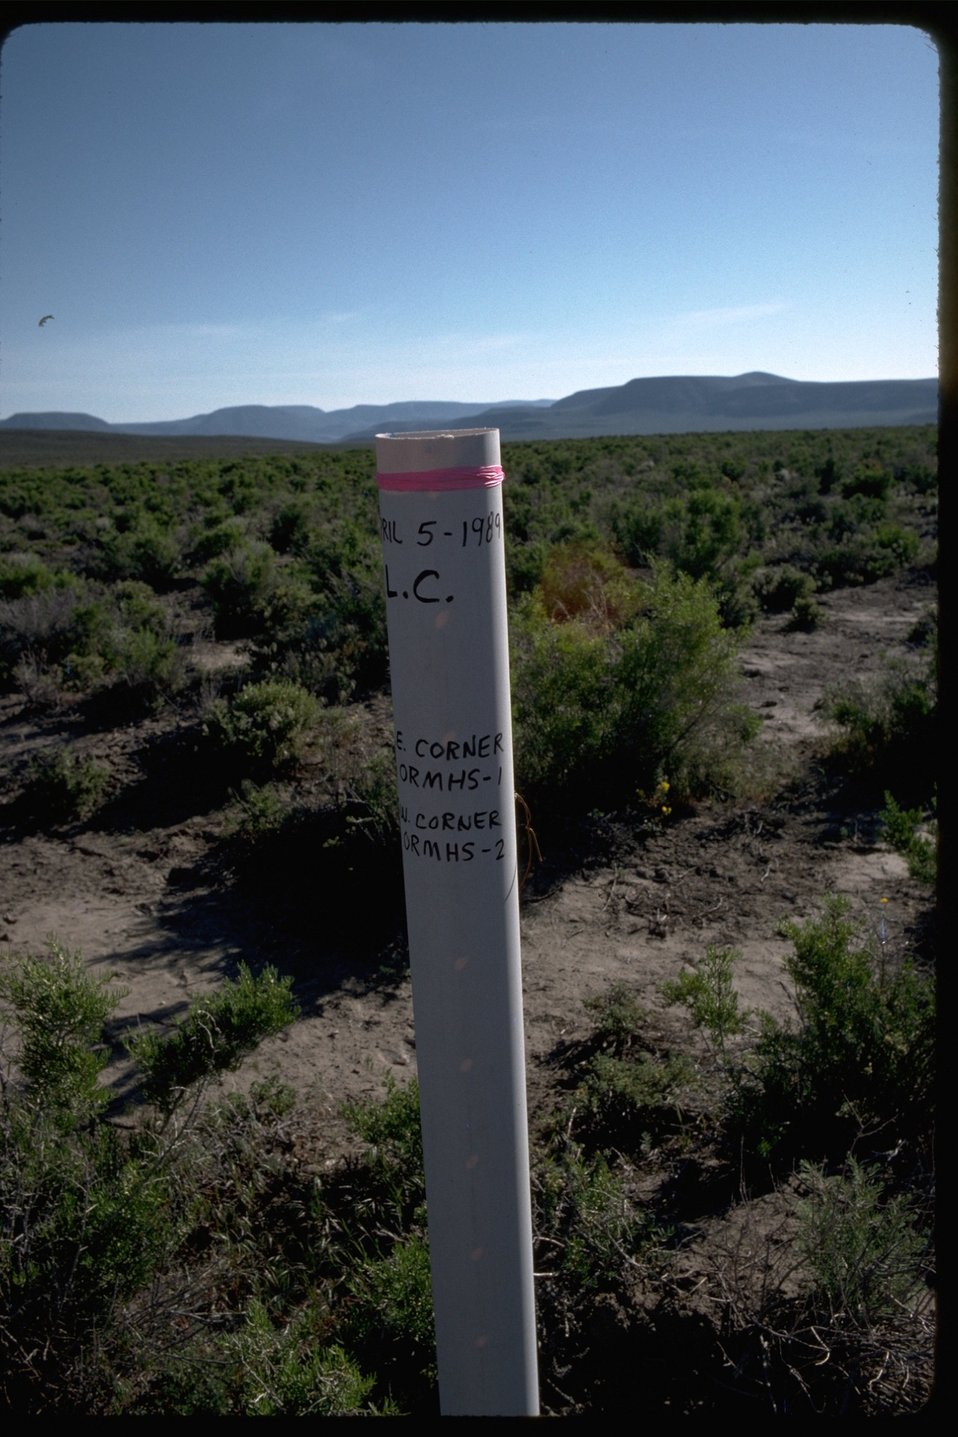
Close up of a PUC pipe claim marker in the Arizona Creek vicinity of the Pueblo Mountains.